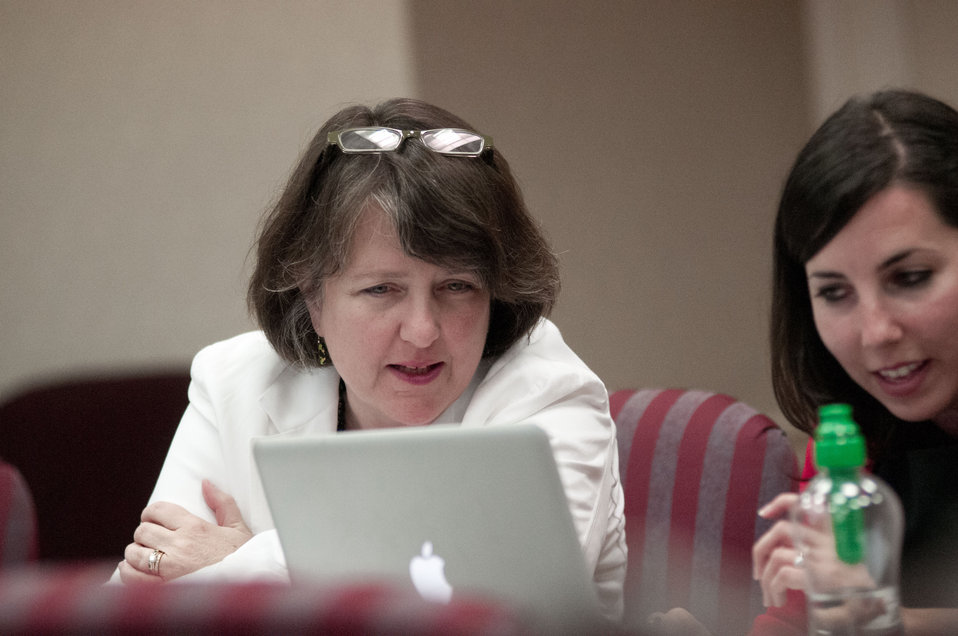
Happy to sit down with the public, Agriculture Deputy Secretary Kathleen Merrigan, left, joins New Media Content Specialist Rebecca Frank to host a live Twitter chat focused on the Department’s support of local and regional food systems and the recent release of the 2.0 version of the Know Your Farmer, Know Your Food Compass on Tuesday, July 24, 2012, in Washington, D.C. Deputy utilized her staff and other subject matter experts to provide useful answers to questions from the public during the #ASKUSDA Virtual Office Hours on Local Food.